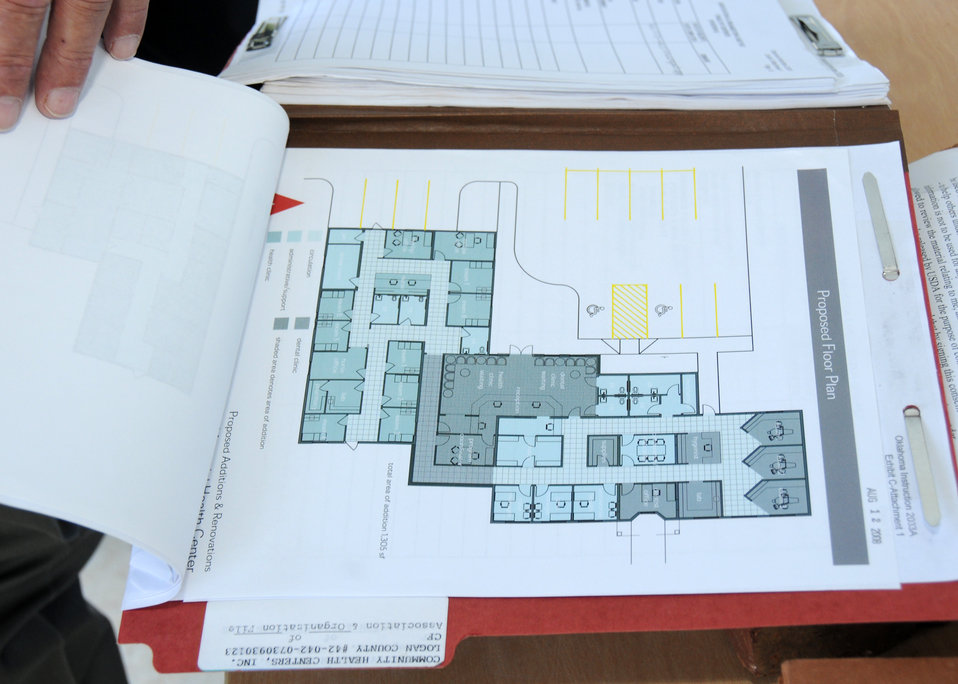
Blueprints for the expansion of the Mary Mahoney Health Center in Langston, OK. The clinic received a CF grant of $100,000.00 and a CF l Direct Loan of $563,863.00 from Rural Development from ARRA funding.